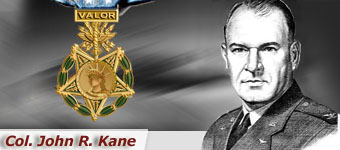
Col. John R. Kane

During Operation Tidal Wave, the most highly decorated military mission in U.S. history, Col. John R. Kane flew one of the 179 B-24 Liberators that took off on an 18-hour, 2,400 mile round trip mission to destroy the Nazi-held oil refinery at Ploesti, Romania. Five Airmen, including Colonel Kane, earned the Medal of Honor that day in 1943.